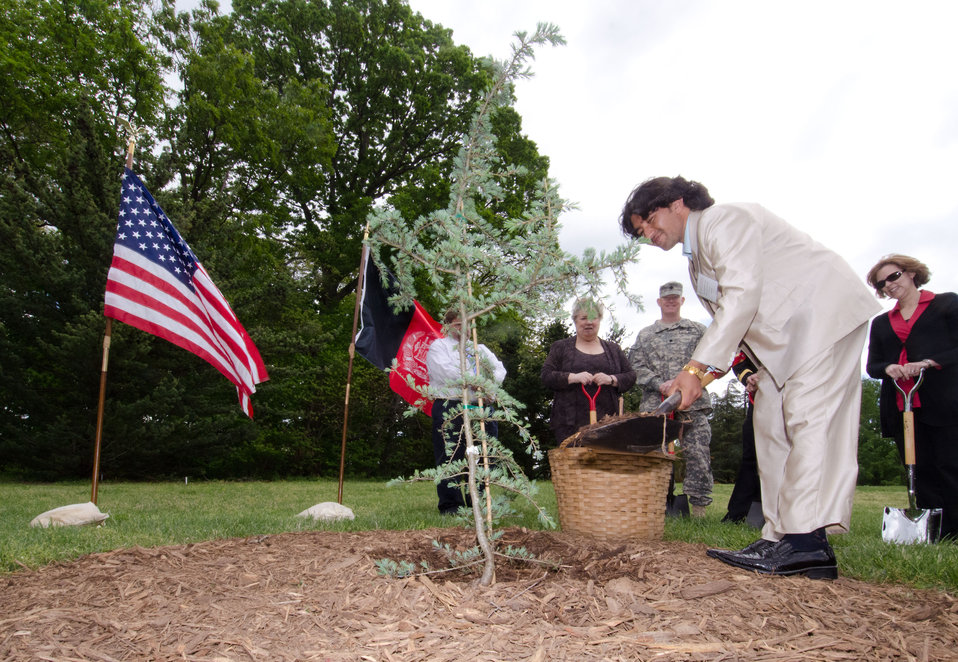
Ghazni University Senior Agricultural Student Abdul Fatah makes a final ceremonial application of mulch during the Arbor Day tree planting of a Cedrus deodara ('Karl Fuchs') at the National Arboretum. The tree is originally from Pakta Province and the most important tree in Afghanistan for timber.